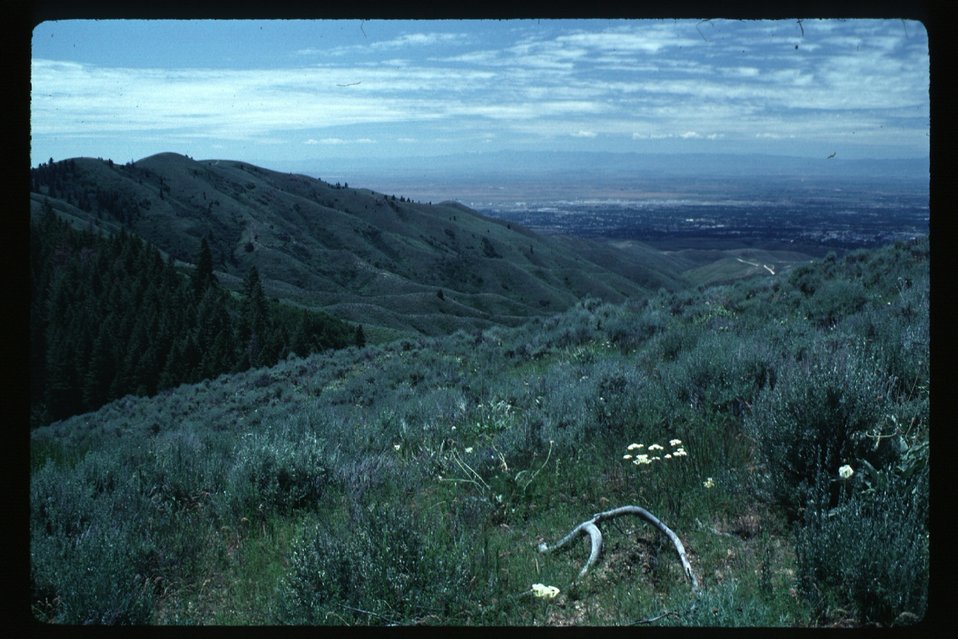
Boise Foothills Boise Front Four Rivers Field Office LSRD Lower Snake River District